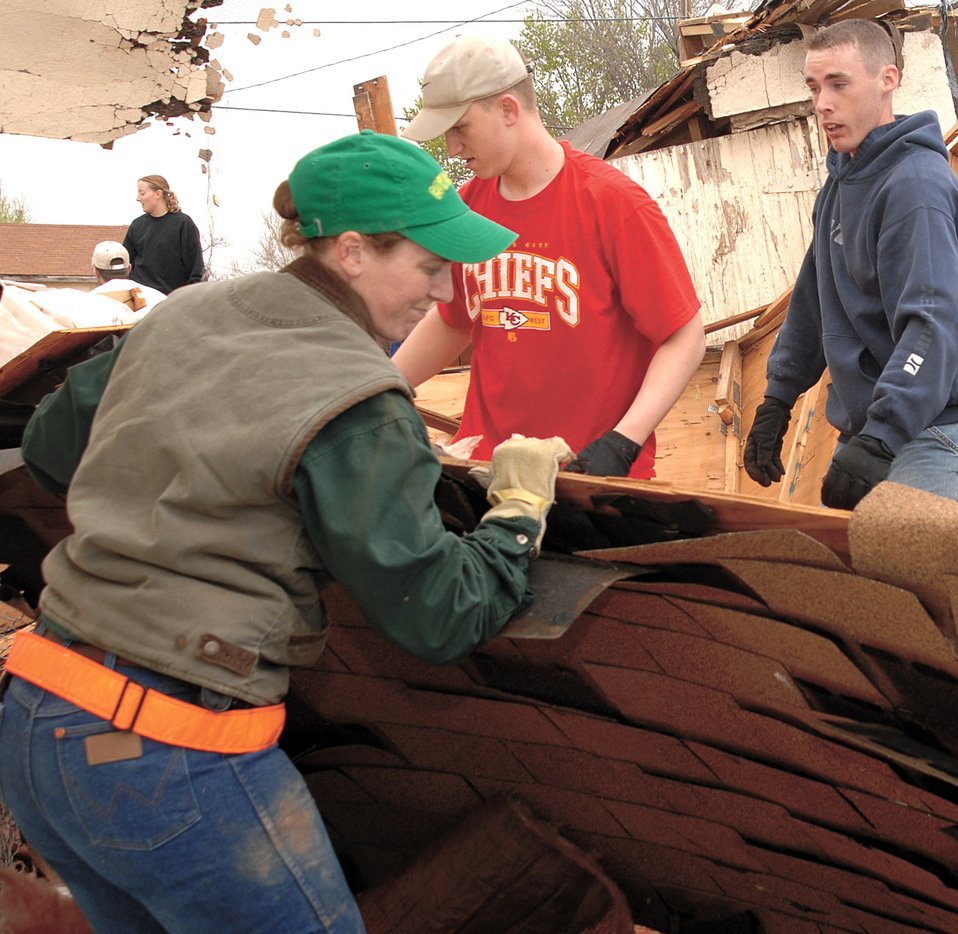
Cannon volunteers lend hands, hope in wake of disaster

Senior Airman Sarah Lunt moves a section of roofing into a trash pile while cleaning up tornado damage March 25 in Clovis, N.M. More than 500 volunteers from nearby Cannon Air Force Base began restoring Clovis after tornadoes ripped through the town March 23. Airman Lunt is assigned to the 27th Logistics Readiness Squadron.